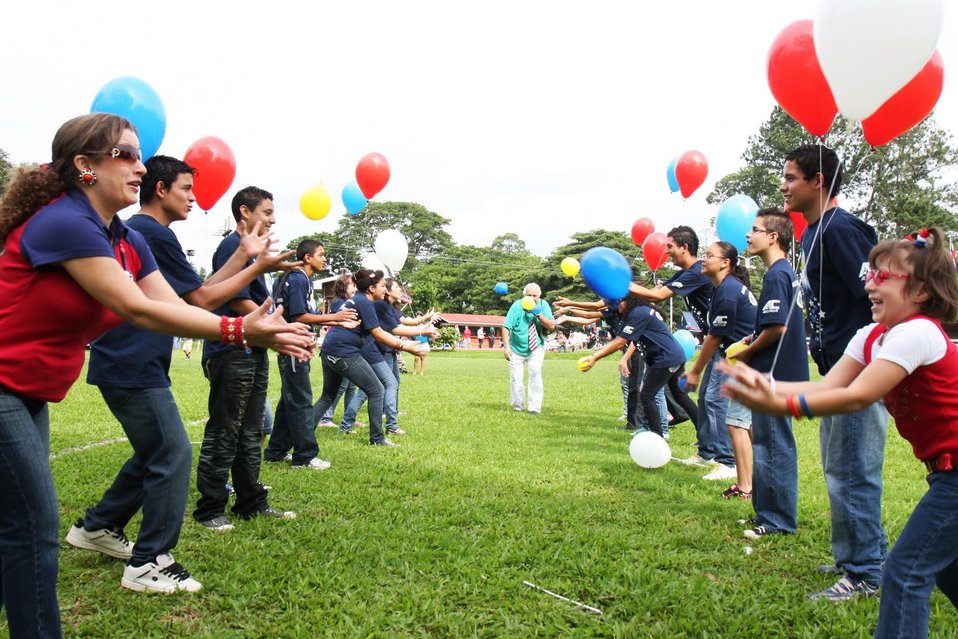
Students Participate in Water Balloon Toss Contest

Students from U.S. Embassy San Jose in Costa Rica's English Access Microscholarship Program participate in the water balloon toss contest during the U.S. Independence Day celebration on July 2, 2010, in San Jose, Costa Rica.